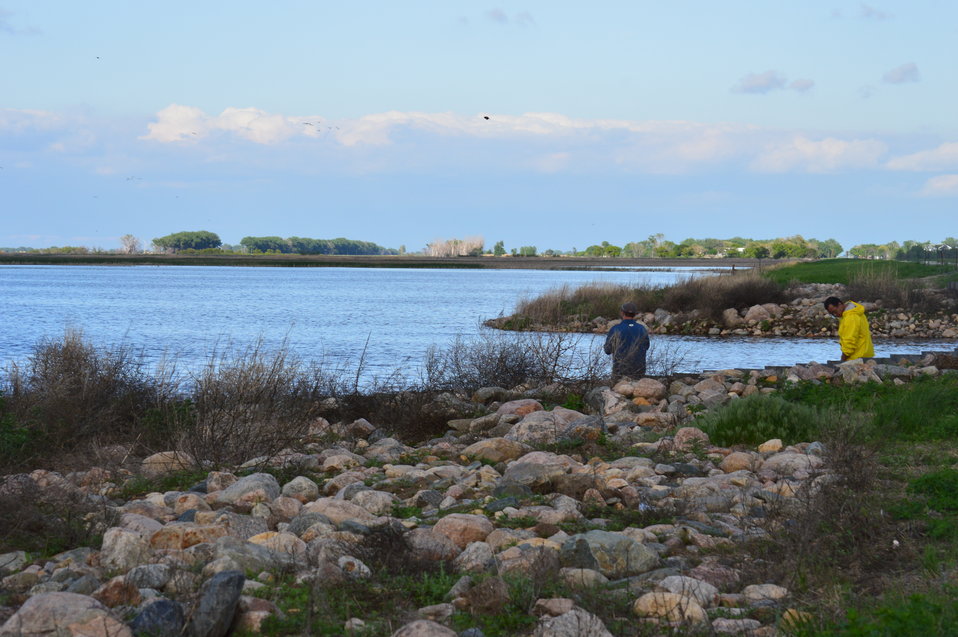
Fishing at Sand Lake

Two men take advantage of the beautiful day and the resource and fish